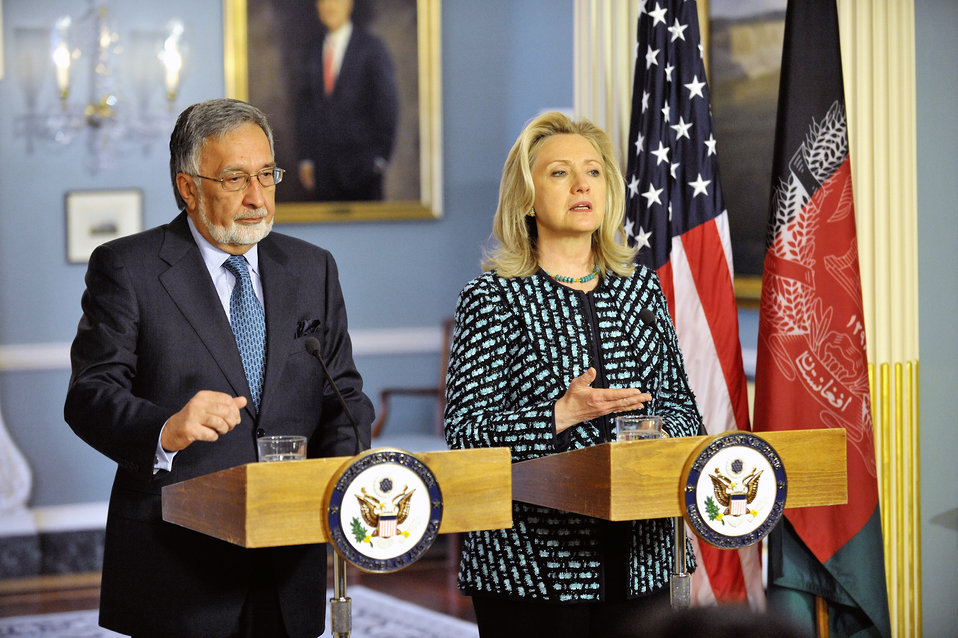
Secretary Clinton Delivers Remarks With Afghanistan Foreign Minister Rassoul

U.S. Secretary of State Hillary Rodham Clinton delivers remarks with Afghanistan Foreign Minister Zalmai Rassoul at the Department of State in Washington, D.C. on March 21, 2012.